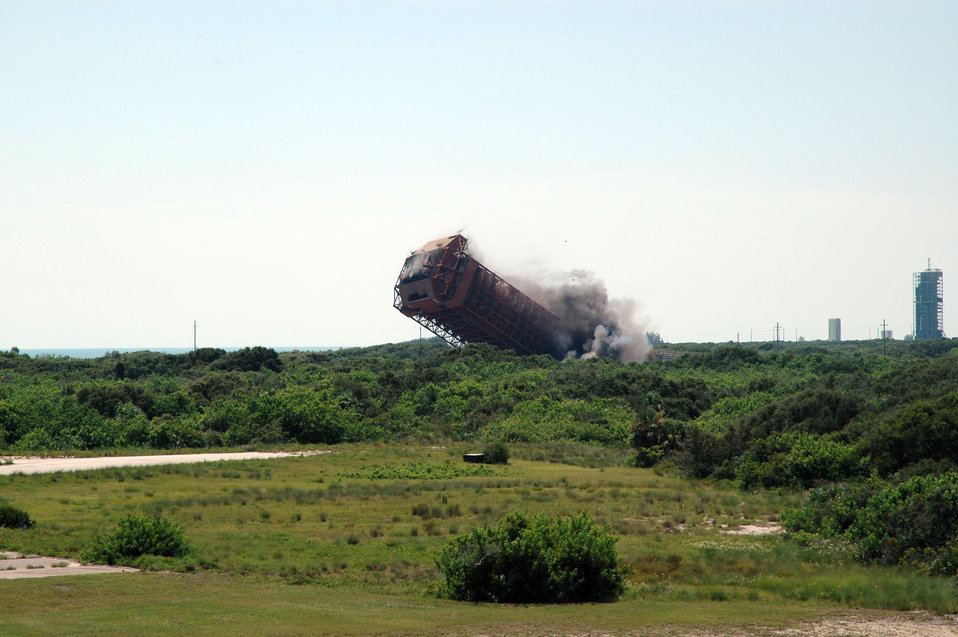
Historic Cape Canaveral tower toppled

CAPE CANAVERAL AIR FORCE STATION, Fla. -- A 1,300-ton structure here is demolished Aug. 6. The 179-foot mobile service tower was used to launch 51 Atlas/Agena space launch vehicles in the 1960s and 1970s.